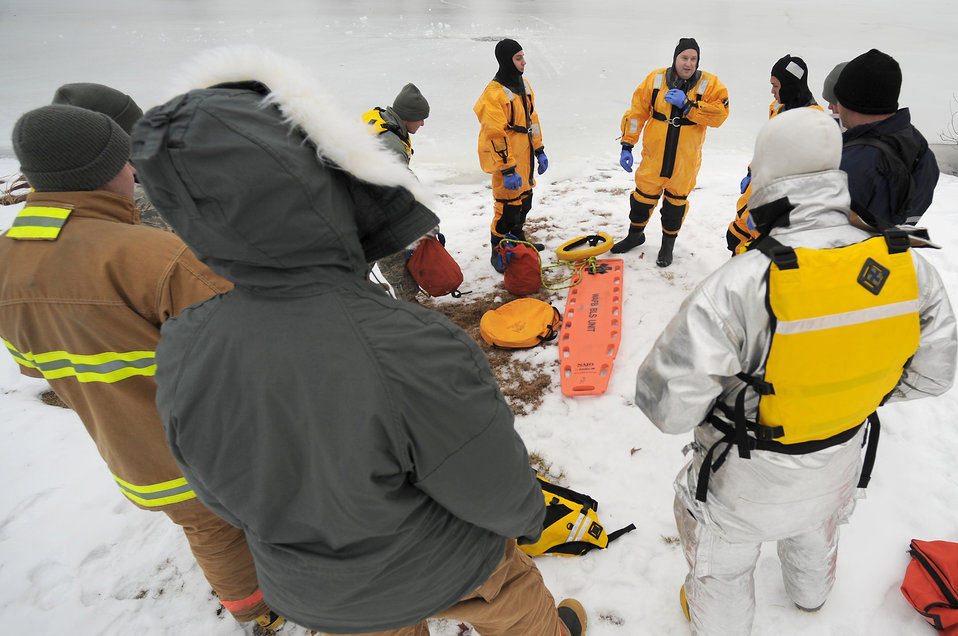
Ice rescue training

Firemen from the 509th Civil Engineer Squadron participate in ice rescue training Jan. 31, 2011, at Whiteman Air Force Base, Mo.